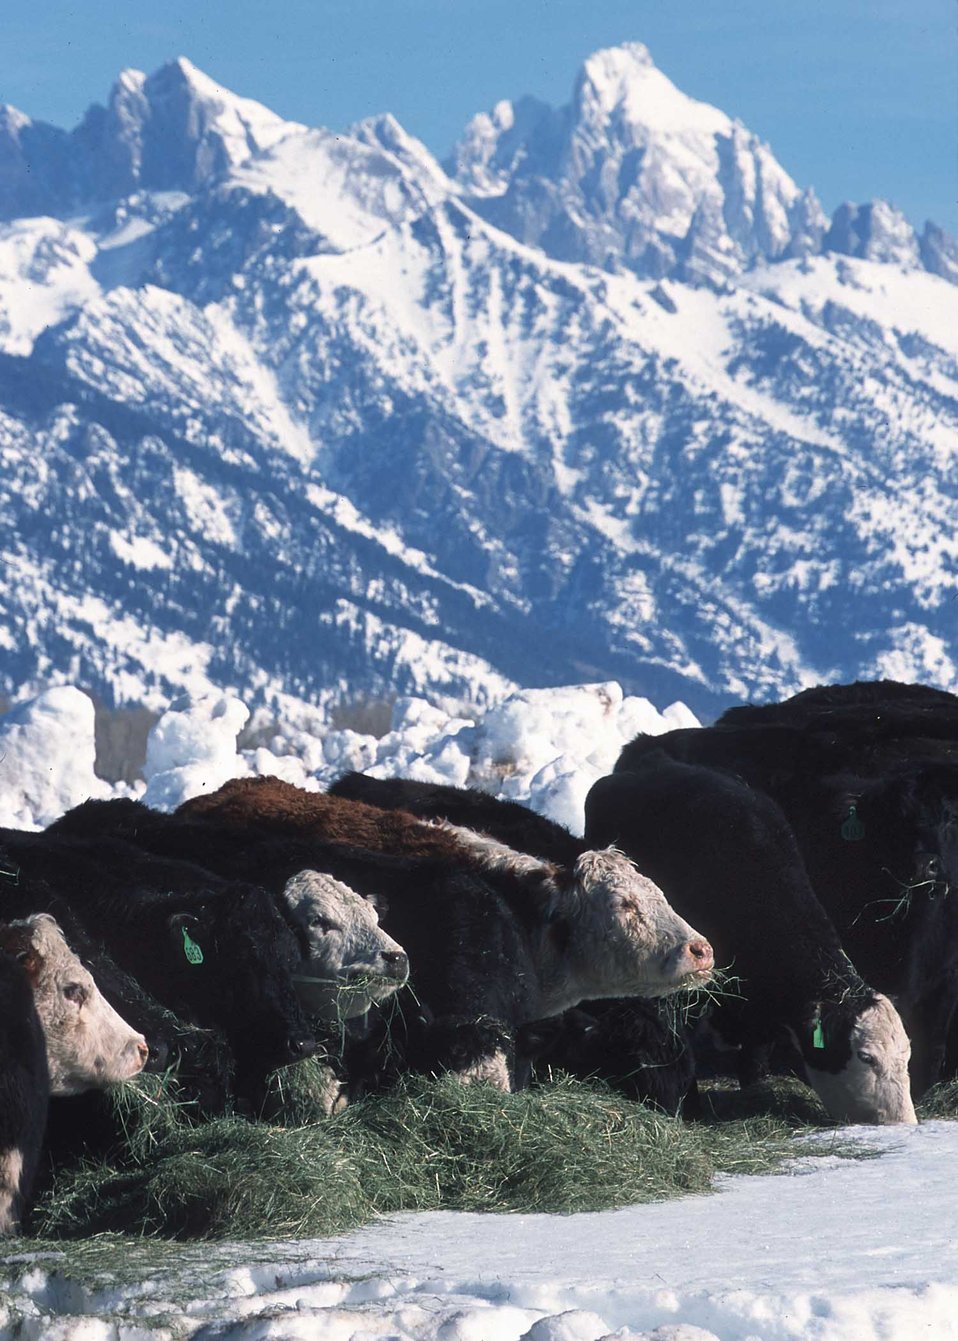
Feeding hay to cattle in deep snow conditions. Jackson, Wyoming.